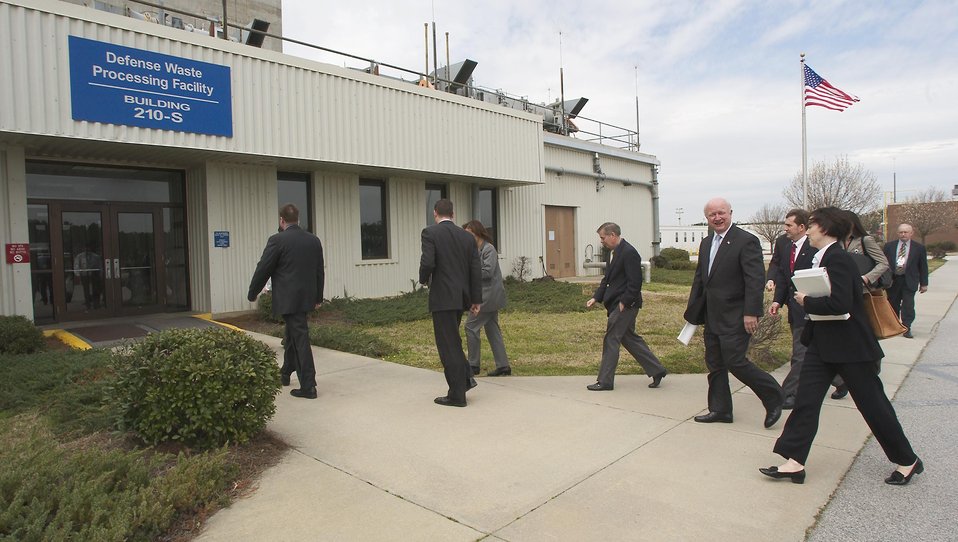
SECRETARY OF ENERGY BODMAN ENTERING THE SAVANNAH RIVER SITE'S DEFENSE WASTE PROCESSING FACILITY, MARCH 11, 2005.

THE SAVANNAH RIVER SITE'S DEFENSE WASTE PROCESSING FACILITY NEAR AIKEN, S.C., IS THE WORLD'S LARGEST RADIOACTIVE WASTE VITRIFICATION FACILITY. THE PURPOSE OF DWPF IS TO IMMOBILIZE APPROXIMATELY 37 MILLION GALLONS OF HIGH LEVEL RADIOACTIVE WASTE FROM UNDERGROUND TANKS AT THE SRS. THE HIGH LEVEL WASTE IS VITRIFIED INTO A DURABLE BOROSILICATE GLASS, POURED INTO STAINLESS STEEL CANISTERS AND STORED PRIOR TO EVENTUAL DISPOSAL IN A GEOLOGIC REPOSITORY.